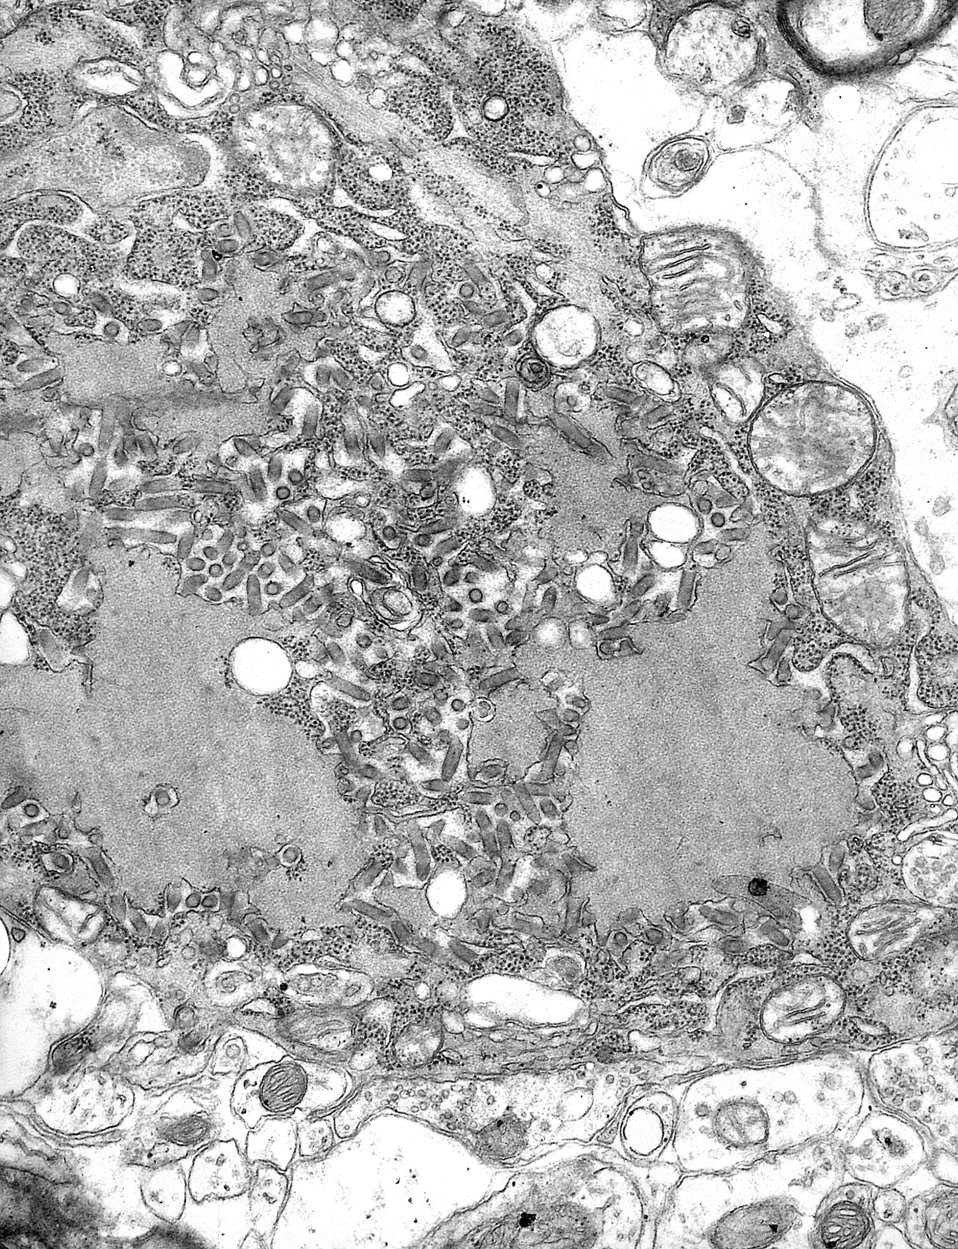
Electron micrograph of the Rabies Virus.